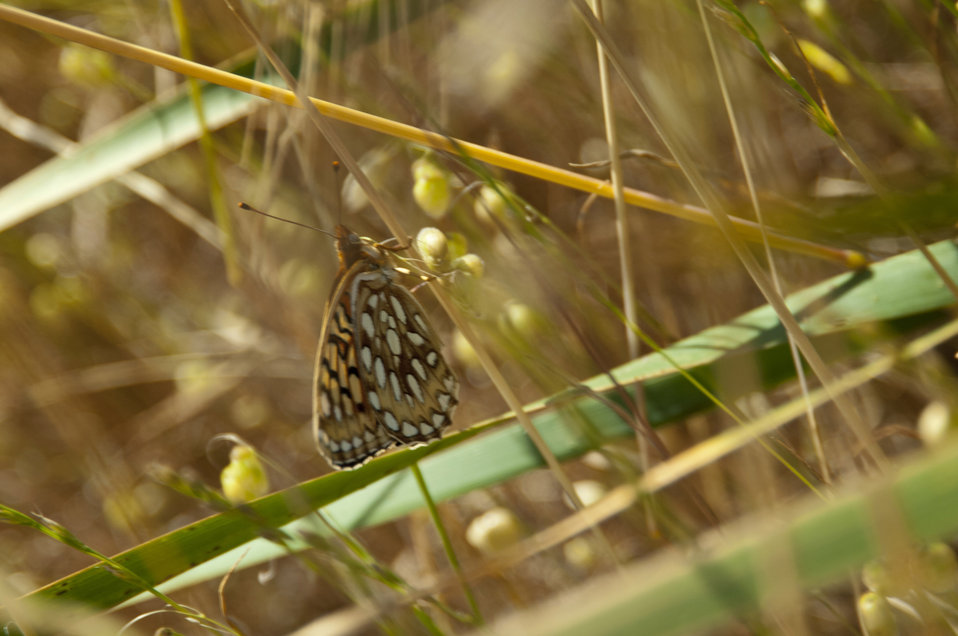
Callippe Silverspot Butterfly 1

Photo Credit: Sarah Swenty/USFWS

Seen recently on San Bruno Mountain, the endangered Callippe silverspot butterfly is found in the SF Bay Area of California.